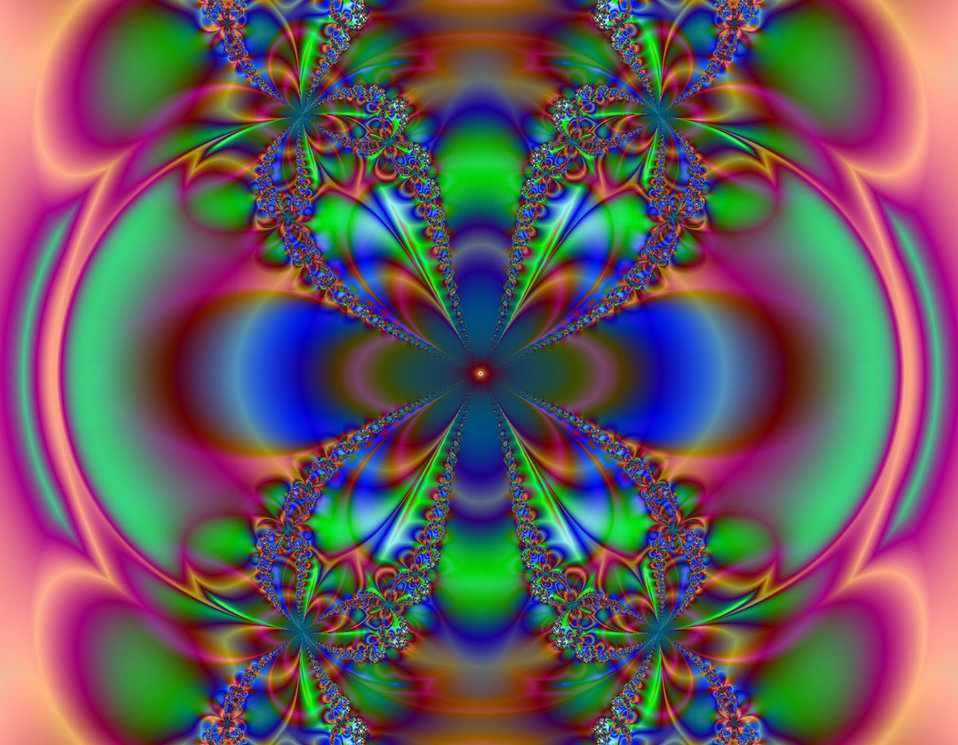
Ribbons and bows

Fractal art appears to be ribbons and bows.